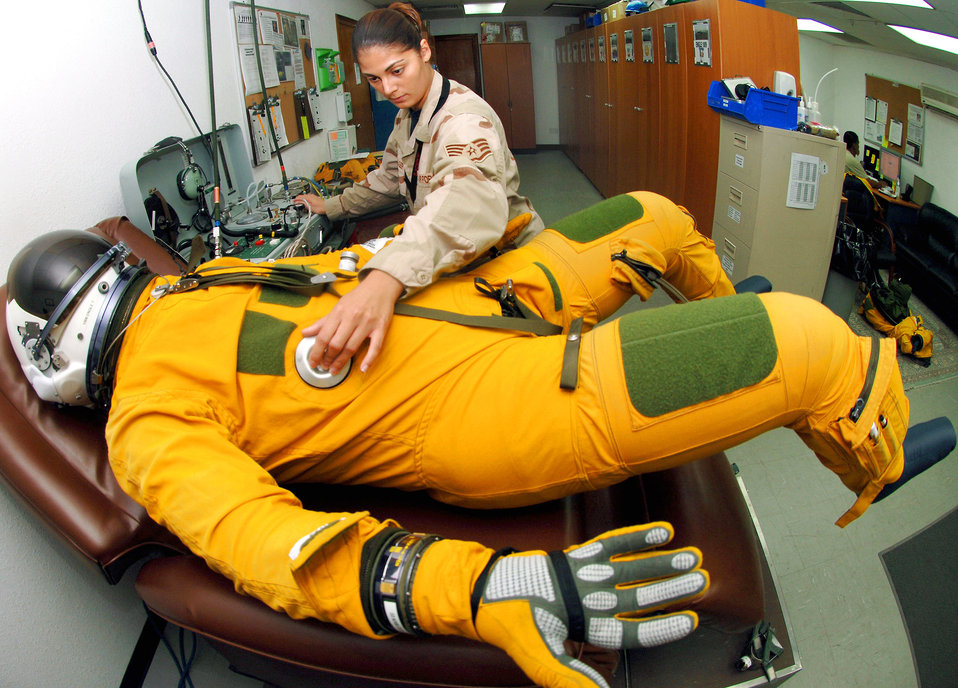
Checking out his suit

Staff Sgt. Nikolina Kreager, a life support specialist with the 99th Expeditionary Reconnaissance Squadron at an air base in Southwest Asia, ensures a U-2 Dragon Lady pilot is set for the day's mission by checking the flight suit to make sure it can pressurize properly at high altitudes.